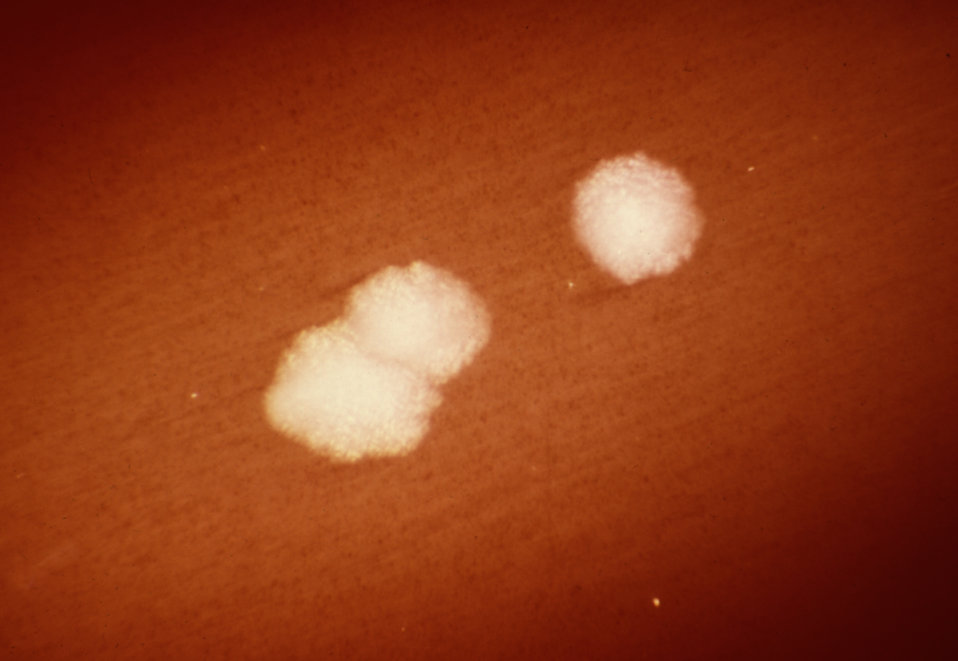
This enlargement depicts Clostridium paraputrificum colonies grown on a 48 hour blood agar plate; Magnification 15X.